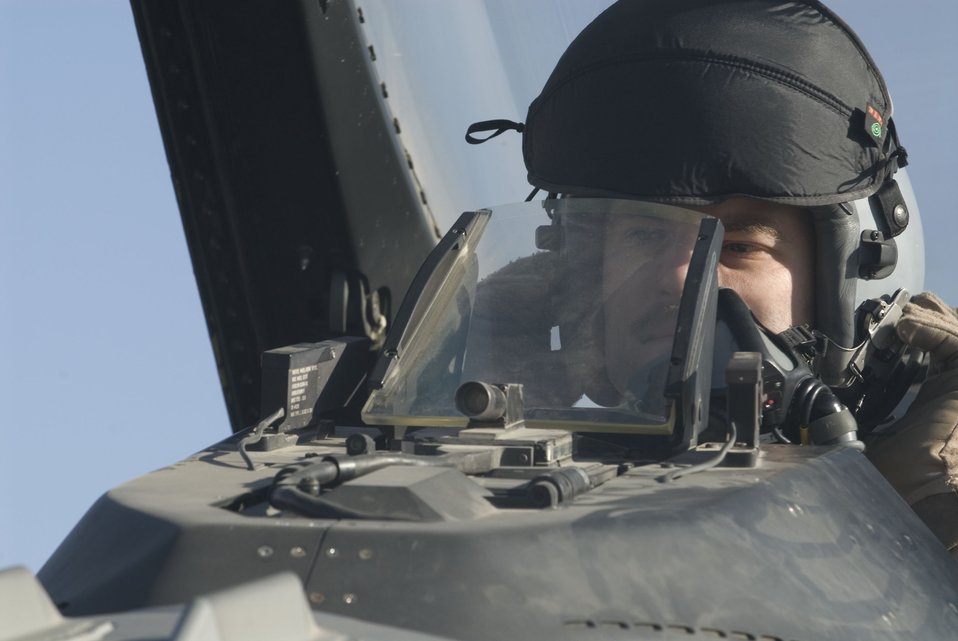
Preparing to launch

Capt. Travis Keenan dons his helmet in preparation for a combat mission Dec. 17 at Balad Air Base, Iraq. Captain Keenan, a 22nd Expeditionary Fighter Squadron fighter pilot, is deployed from Spangdahlem Air Base, Germany.